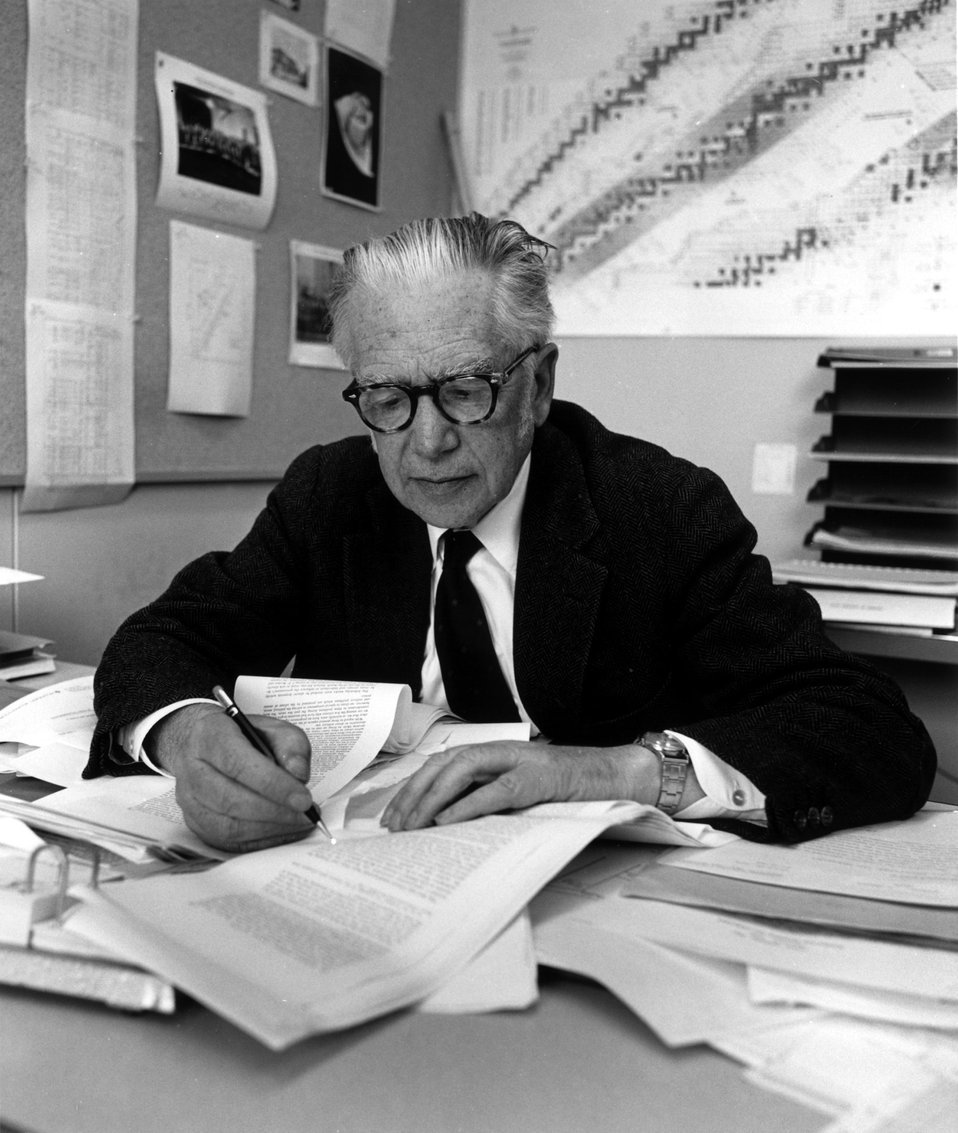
Emilio Serge working on proofs of book on Enrico Fermi. Nobel Prize for Physics, 1959.